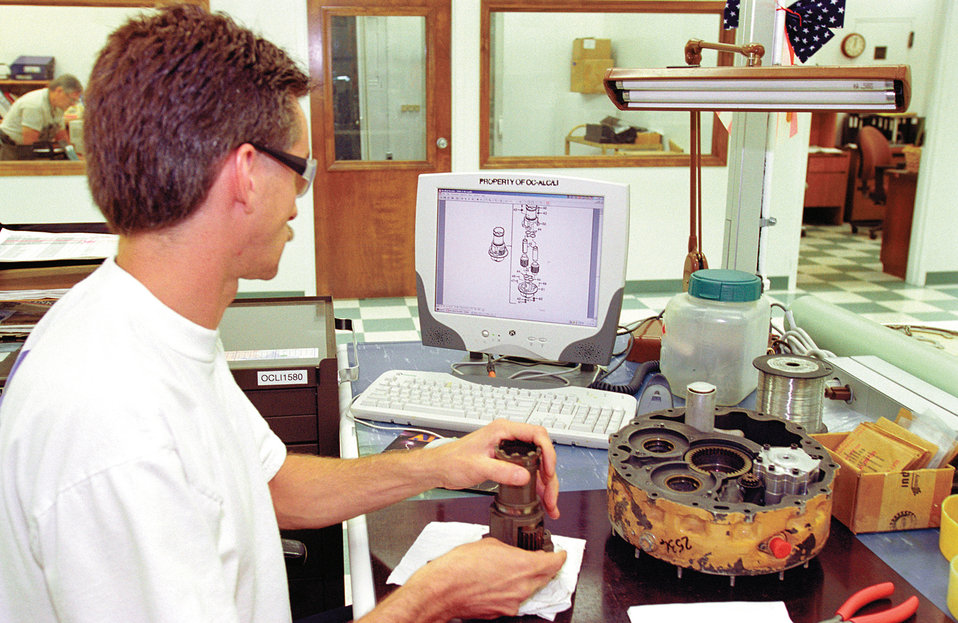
TOs online

TINKER AIR FORCE BASE, Okla. (AFPN) -- Chris Caldwell, a pneudraulics mechanic, reviews a technical order on his computer monitor while rebuilding an F-15 Eagle part. An online TO library puts the latest technical orders a mouse-click away from each of the 10,000 or so mechanics at the Oklahoma City Air Logistics Center here.